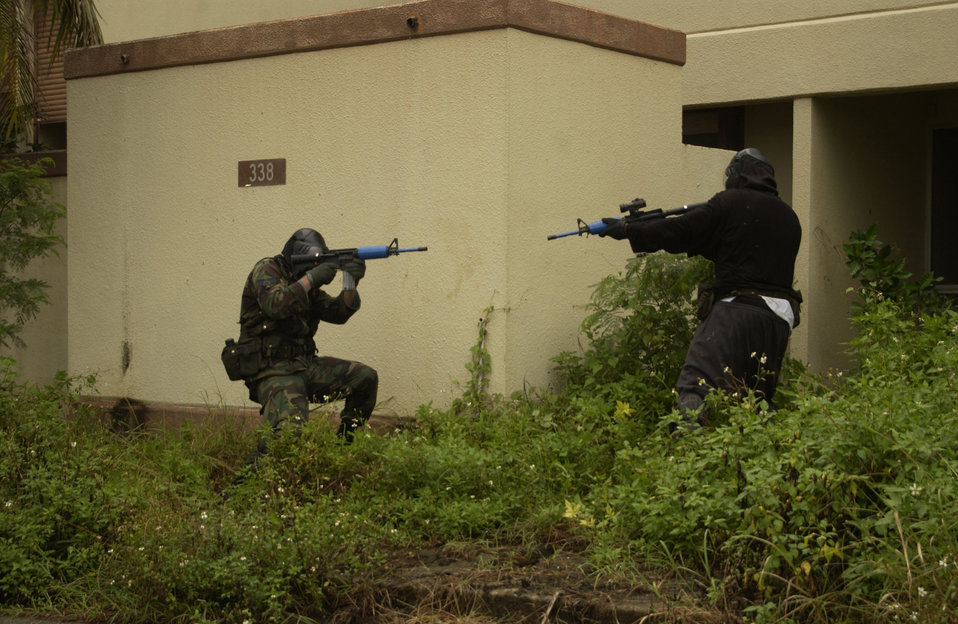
Taking fire

ANDERSEN AIR FORCE BASE, Guam -- Senior Airmen Nicholas Kehoe (left) takes enemy fire from an opposing force, Senior Airman Terry Florence, during a convoy training exercise here Sept. 7. Both Airmen are assigned to the 613th Contingency Response Group.